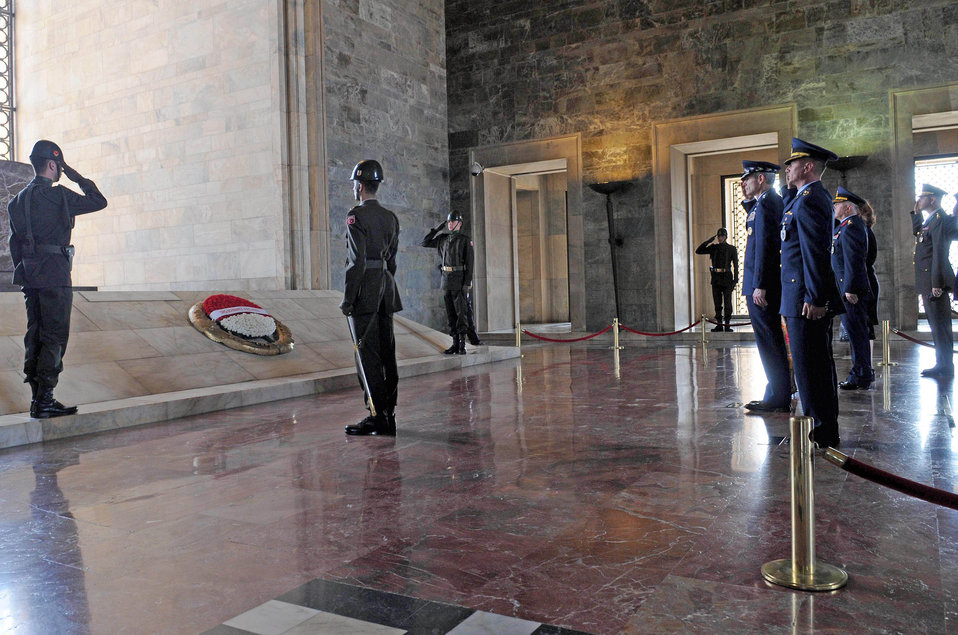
CSAF visits Turkey

Air Force Chief of Staff Gen. Norton Schwartz, along with Turkish air force leaders and Turkish soldiers, salutes during a wreath-laying ceremony July 19, 2010, in Ankara, Turkey. The ceremony honored Mustafa Kemal Ataturk, the founder of the Republic of Turkey, and took place at Anitkabir, Ataturk's memorial and mausoleum. Airmen from local Air Force units accompanied the general and his wife in the ceremony. The ceremony was the first event during General Schwartz's multi-day visit to Turkey.